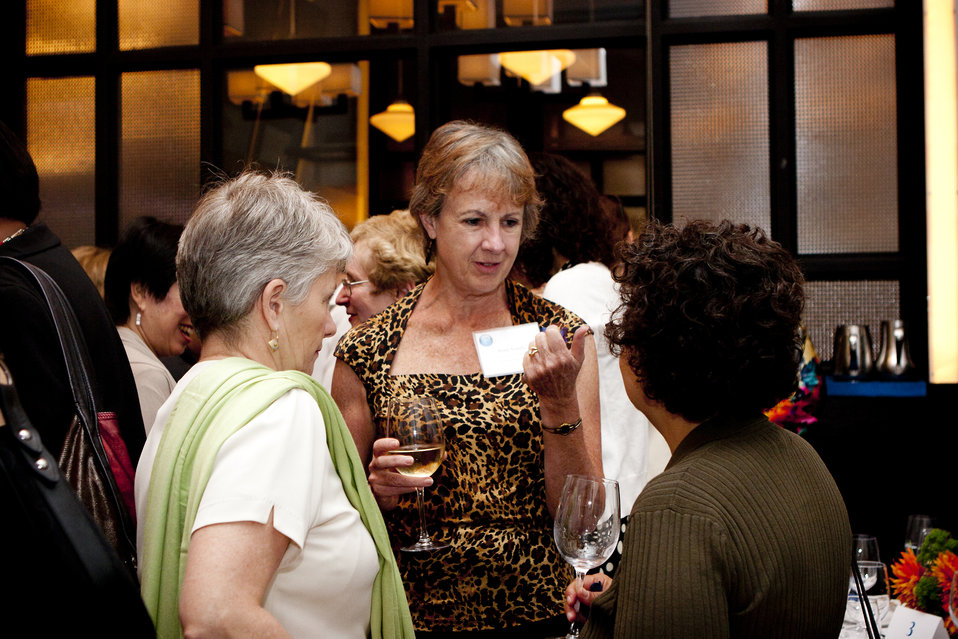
WomenandEnergy 36